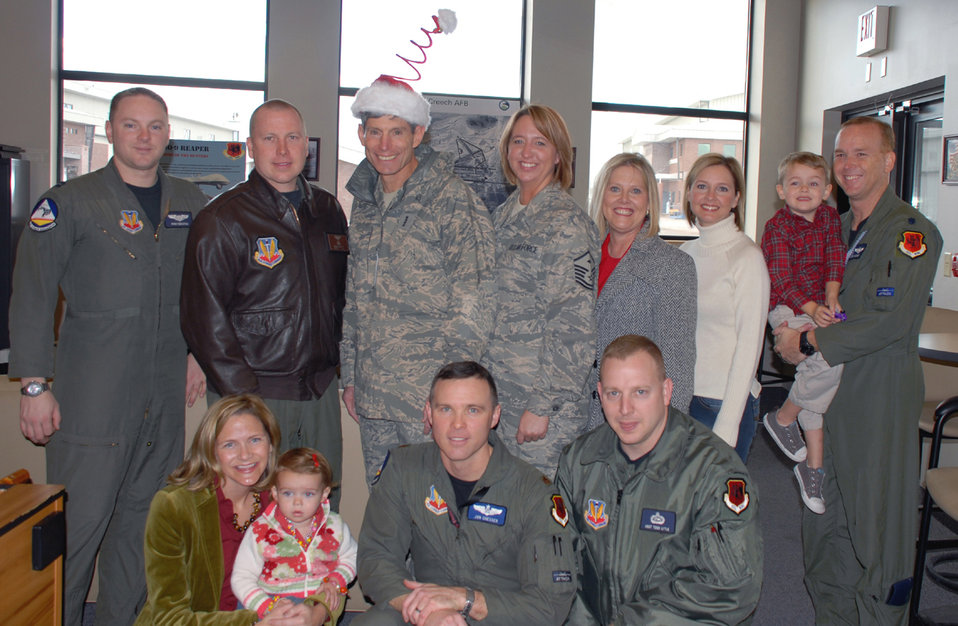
CSAF, Mrs. Schwartz visit Creech AFB

Airmen and family members of the 42nd Attack Squadron at Creech Air Force Base, Nev., spent lunch Christmas day with Gen. Norton Schwartz, Air Force chief of staff, and his wife, Suzie. While at the squadron, General Schwartz personally thanked the aircrews flying combat operations in support of ground troops in Afghanistan.